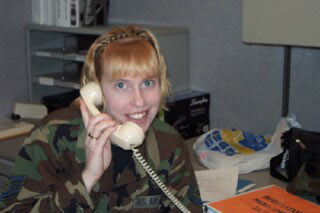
Julie Kycia-Northeast Region

Julie Kycia retired as a Master Sergeant from the U.S. Air Force Reserve after 21 years in April 2013. She was stationed at Westover Air Reserve Base her entire career and was called to active duty for over two years in support of Operation Enduring Freedom/Operation Iraqi Freedom. In her last position before retirement, she served as the administrative supervisor, security manager, and health monitor for a unit of over 350 members. She graduated in May 2010 with a bachelor of arts degree in sociology from Westfield State College. For the past two years, Julie has worked in the Northeast Regional Office of the U.S. Fish and Wildlife Service as the Executive Secretary for the Regional Chief of the National Wildlife Refuge System.